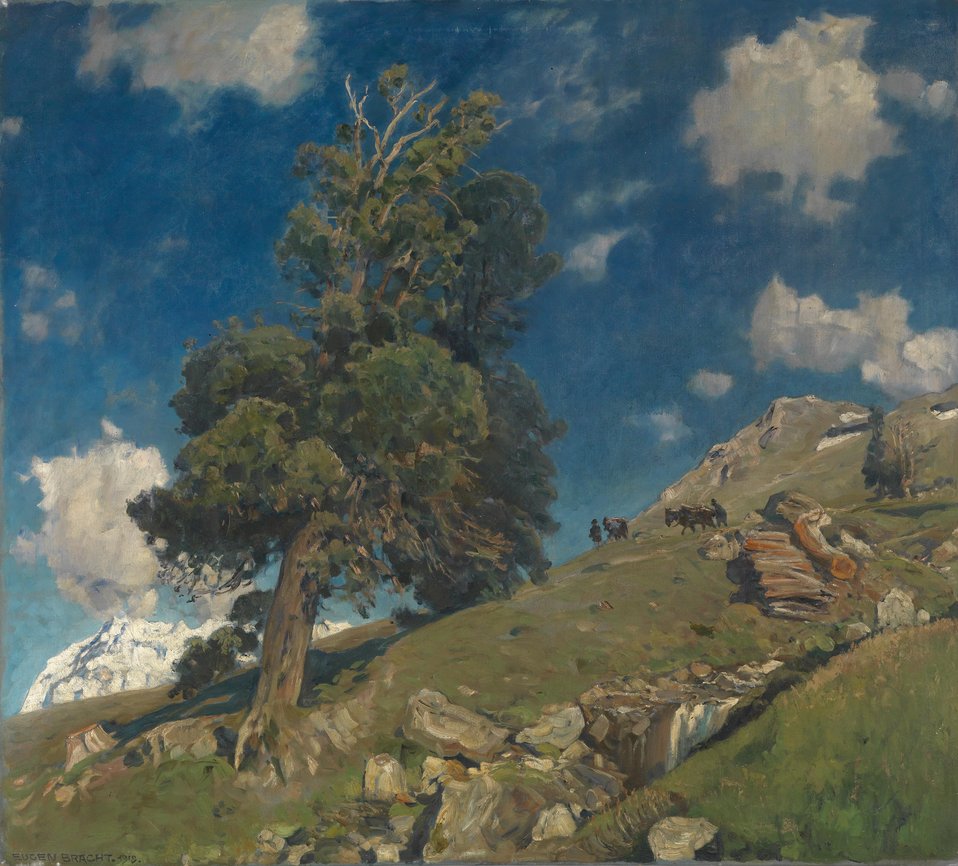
'Monte Rosa und Arven', laut Betitelung auf der Rückseite (Arve = Zirbelkiefer), signiert, datiert Eugen Bracht 1919, rückseitig alte Nummer 1779, Öl auf Leinwand, 90 x 100,5 cm